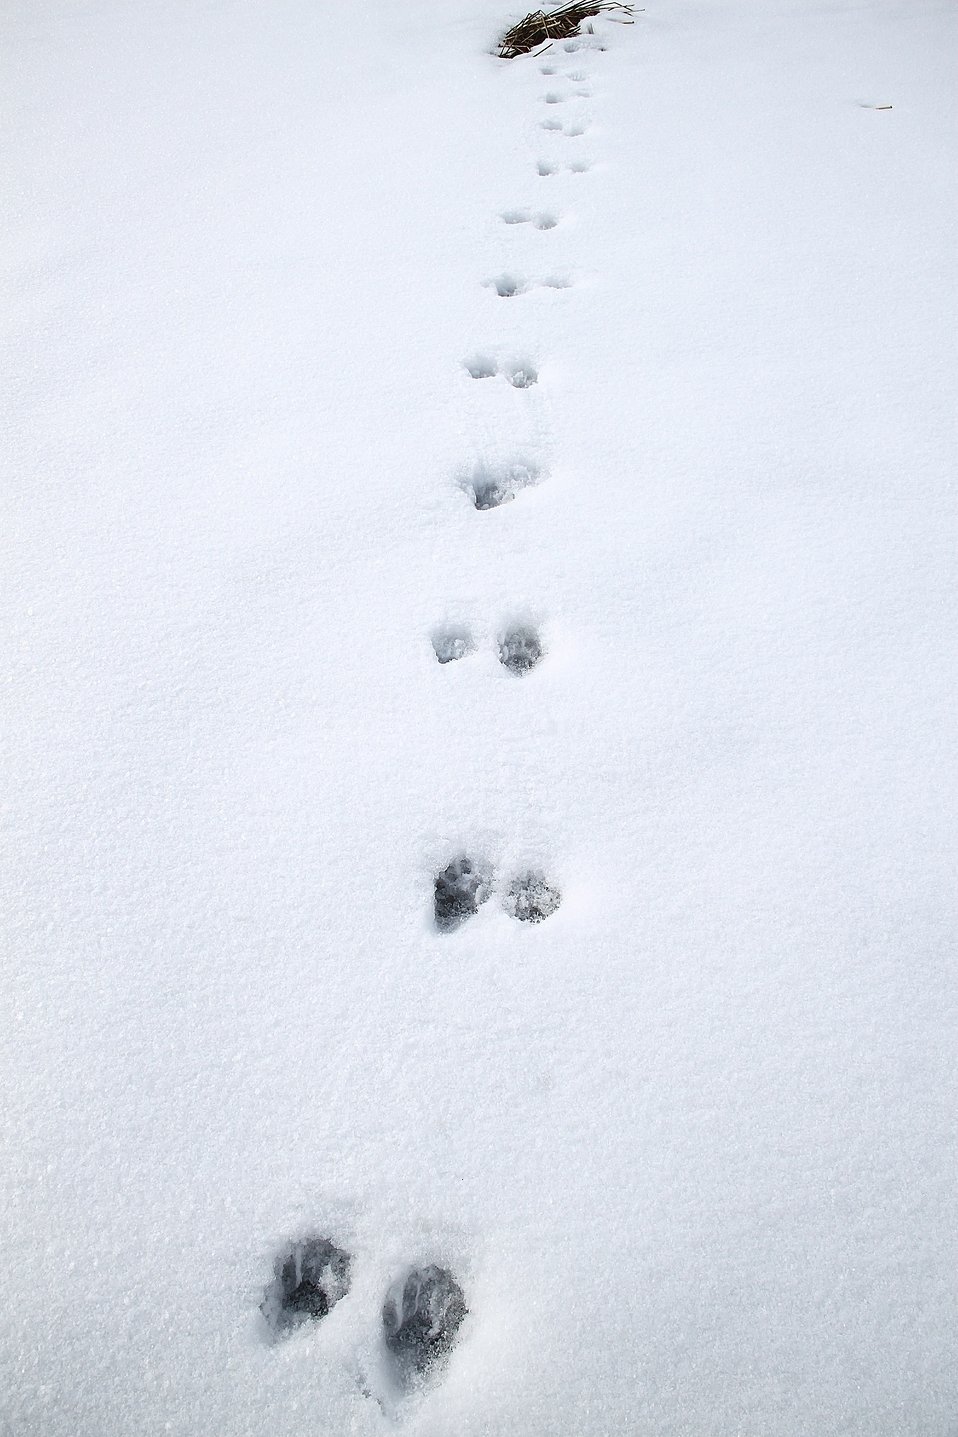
Weasel tracks at Missisquoi National Wildlife Refuge.